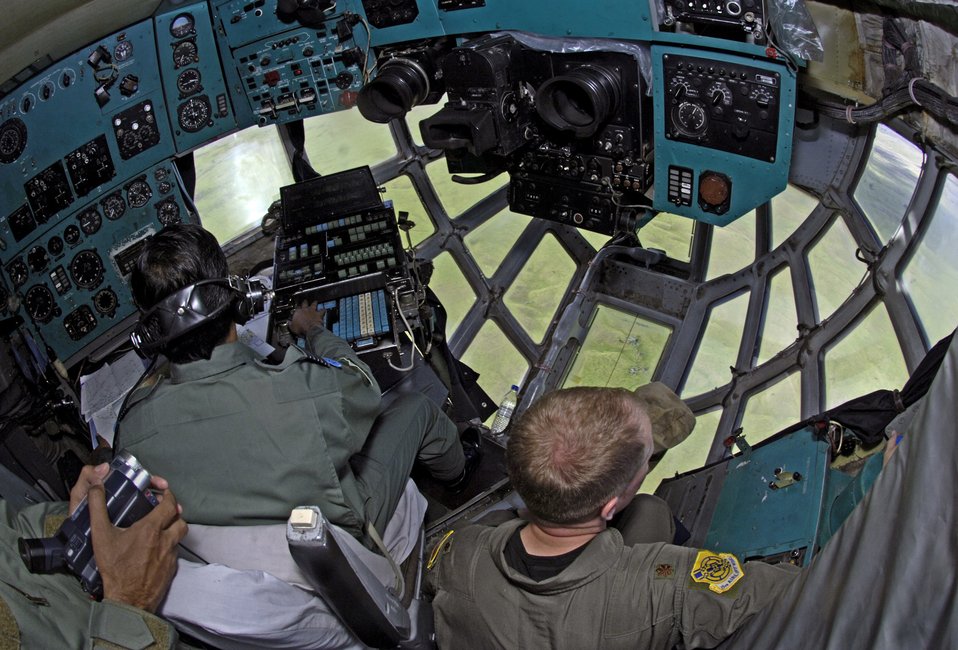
Cockpit briefing

Major Latimer Neal gets a briefing in the cockpit of an Indian IL-76 medium cargo aircraft during a training mission over the big island of Hawaii Sept. 20. The Indian Air Force is flying members of the 15th Airlift Wing to show their American counter parts what their aircraft is capable of.